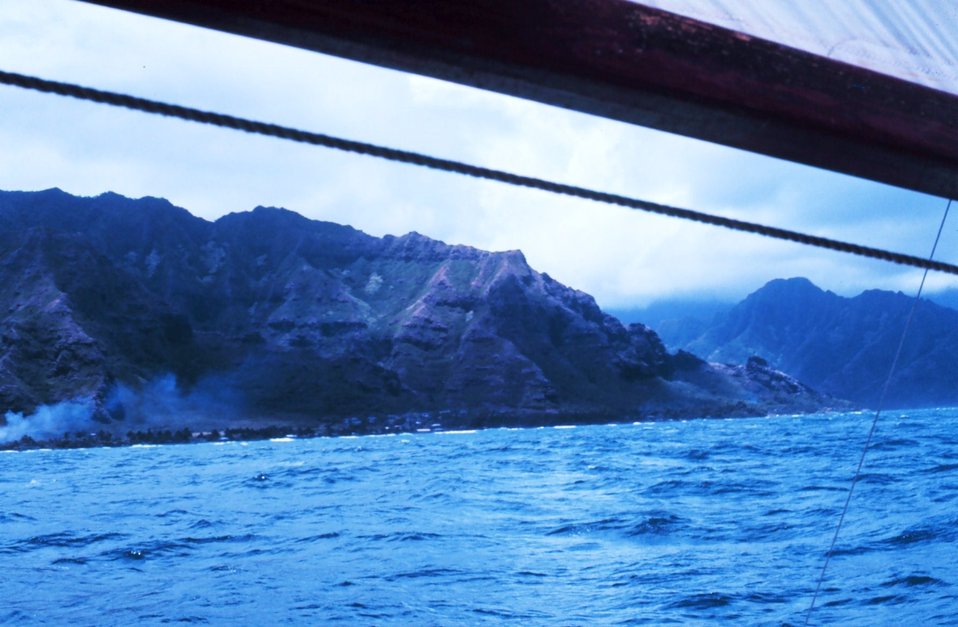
Catamaran sailing off Hawaiian island